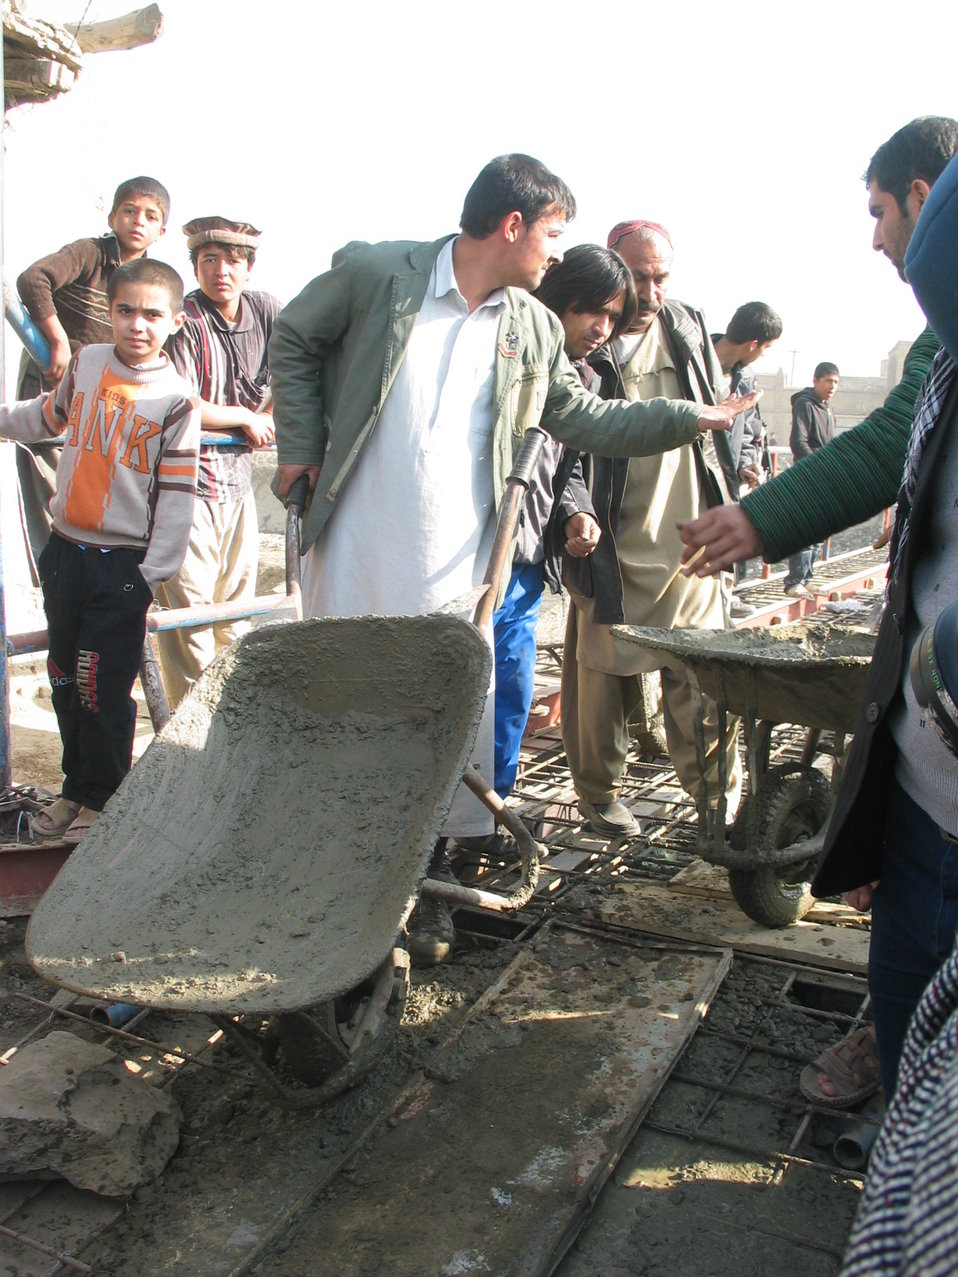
Kabul River Bridge Renovation, December 3, 2010